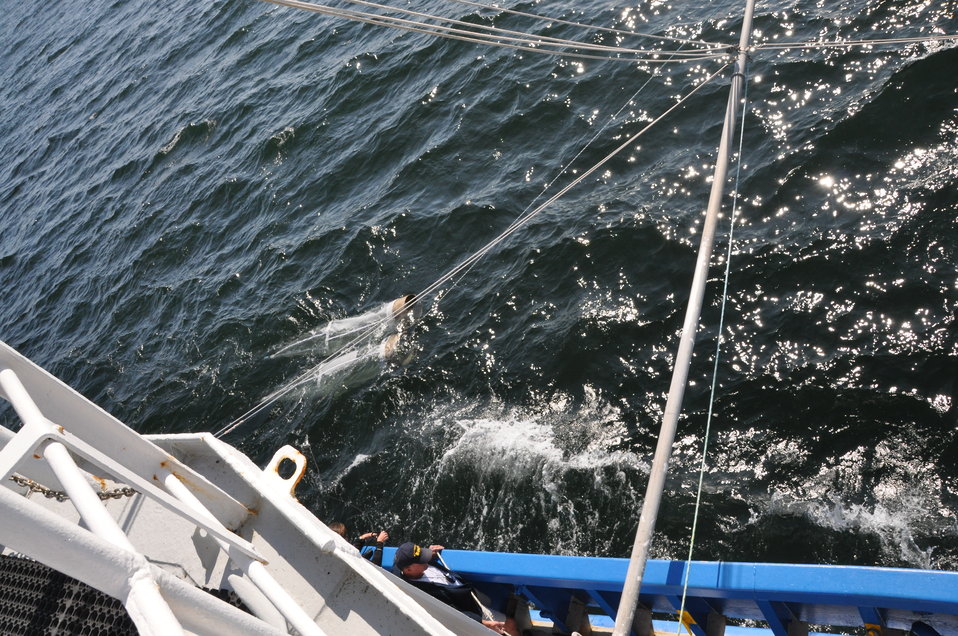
August 2009, Slowing capturing itty bitty zoo and phytoplankton!

...we also caught some seaweed.